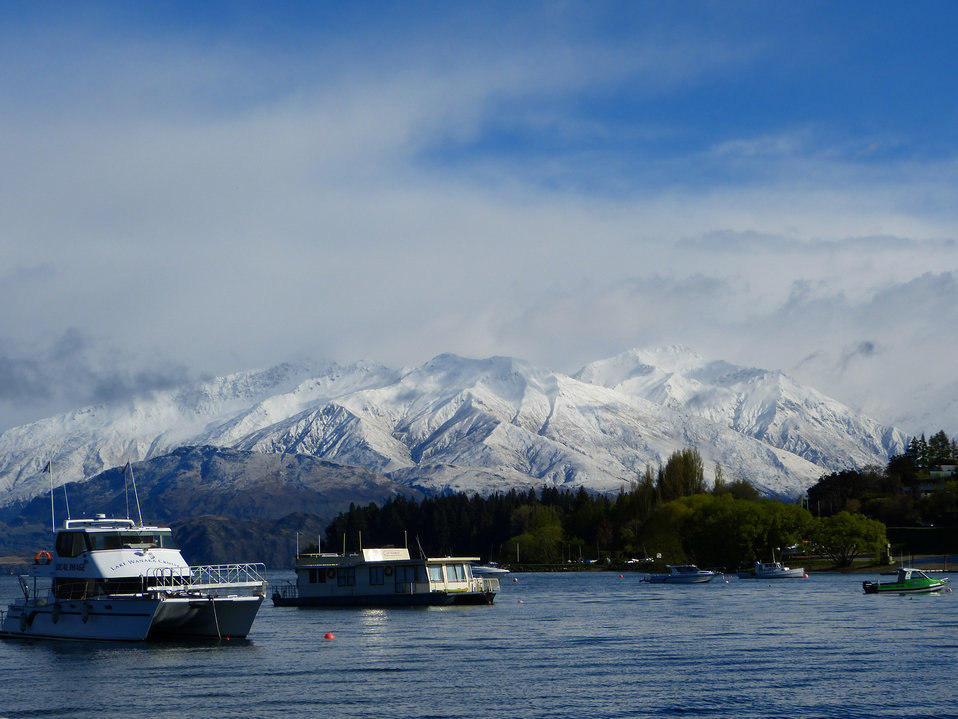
Wanaka

Lake wanaka, otago.